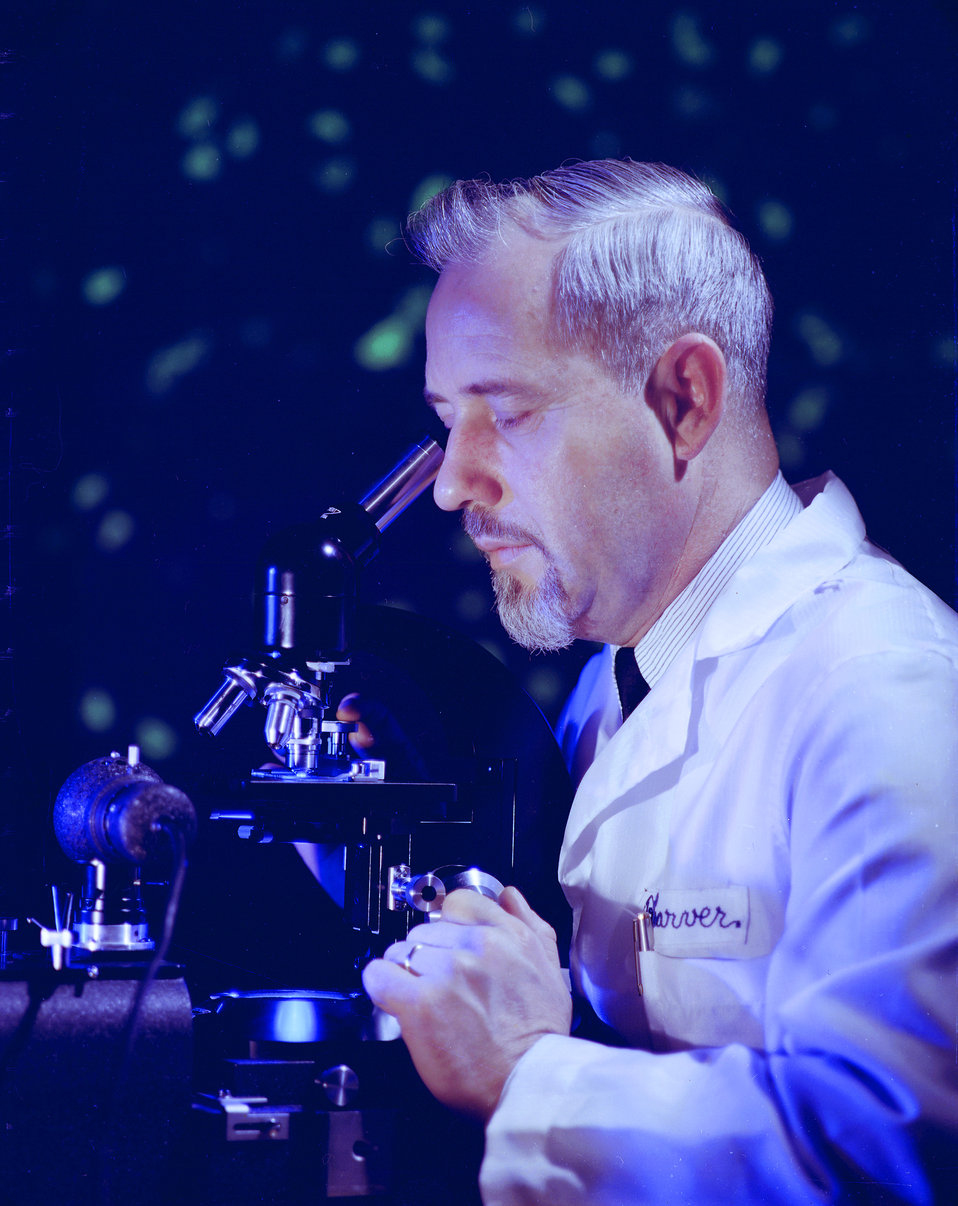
In this historic 1966 image, laboratory technician Russel Carver, was shown seated at his U.V. microscope, while in the background you'll note the projection of a fluorescent-stained photomicrograph.